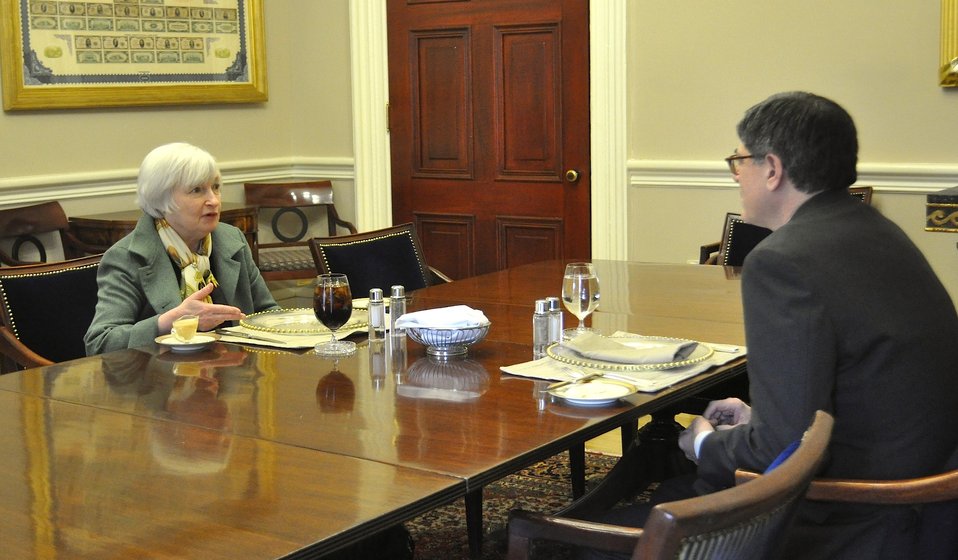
First weekly lunch meeting with Federal Reserve Chair Janet Yellen

February 5, 2014 -- Secretary Lew welcomes Federal Reserve Chair Janet Yellen for their first weekly lunch meeting